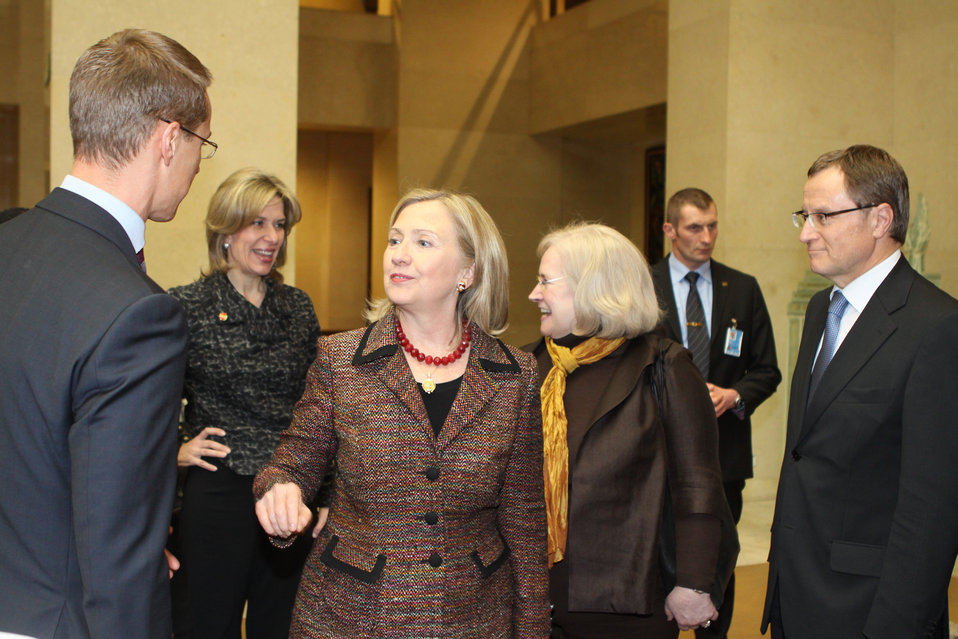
Secretary Clinton Speaks With Finnish Foreign Minister Stubb

U.S. Secretary of State Hillary Rodham Clinton stops to speak with Finnish Foreign Minister Cai-Göran Alexander Stubb on her way to address the Conference on Disarmament in Geneva, Switzerland, on February 28, 2011. Just behind the Secretary on the right is Ambassador U.S. Permanent Representative to the Conference on Disarmament Laura E. Kennedy, and on the far right is Ambassador Hannu Himanen, Permanent Representative of Finland to the United Nations in Geneva.